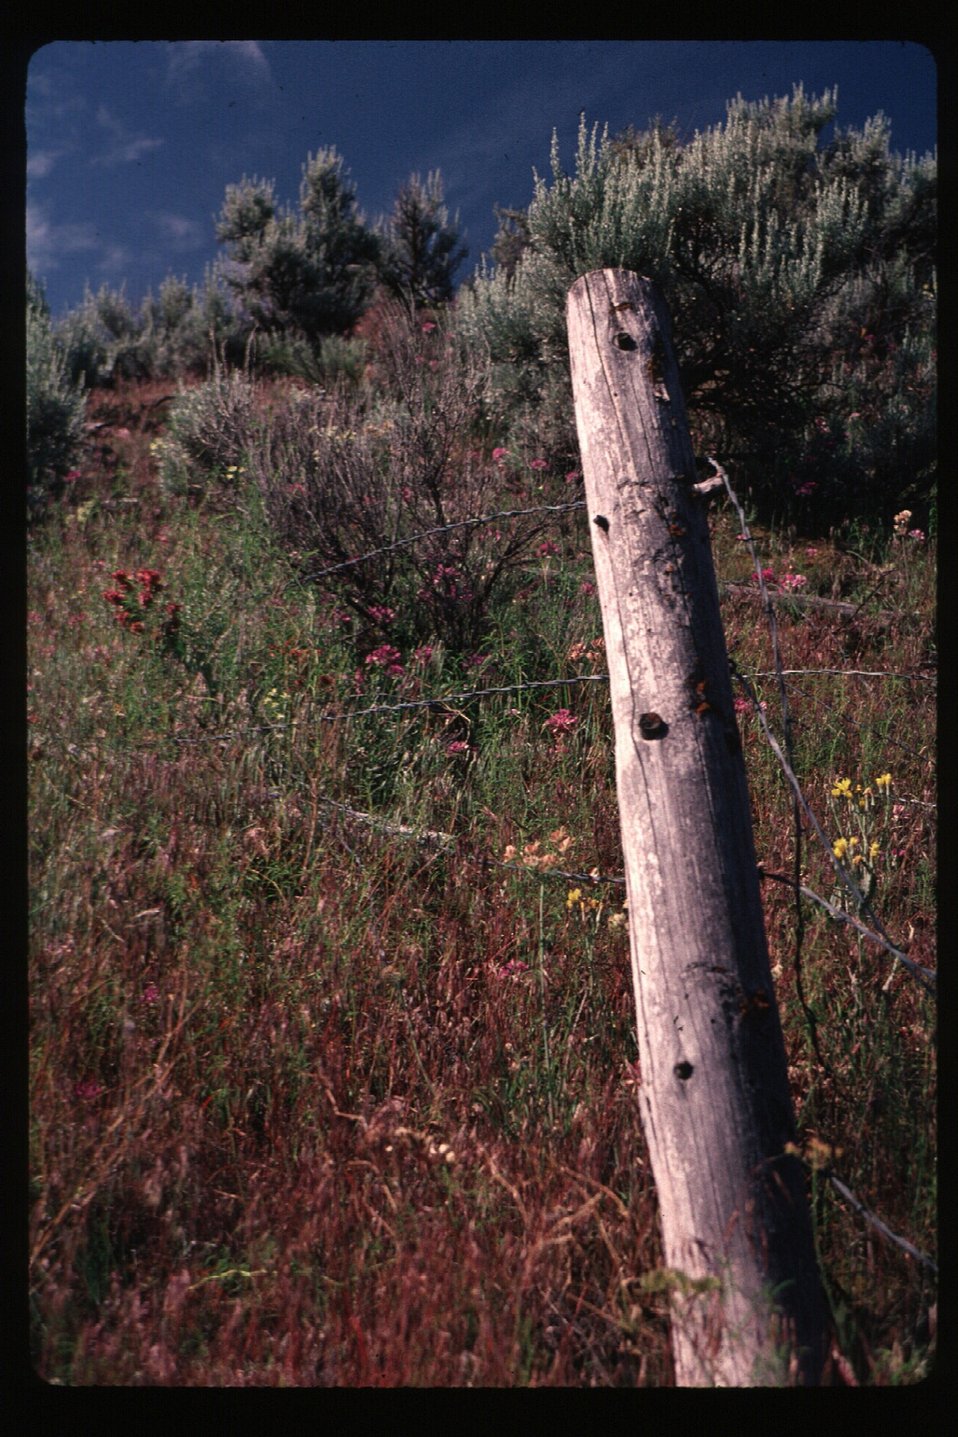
Fence Recreation Scenic Snake River Jarbidge Field Office LSRD Lower Snake River District